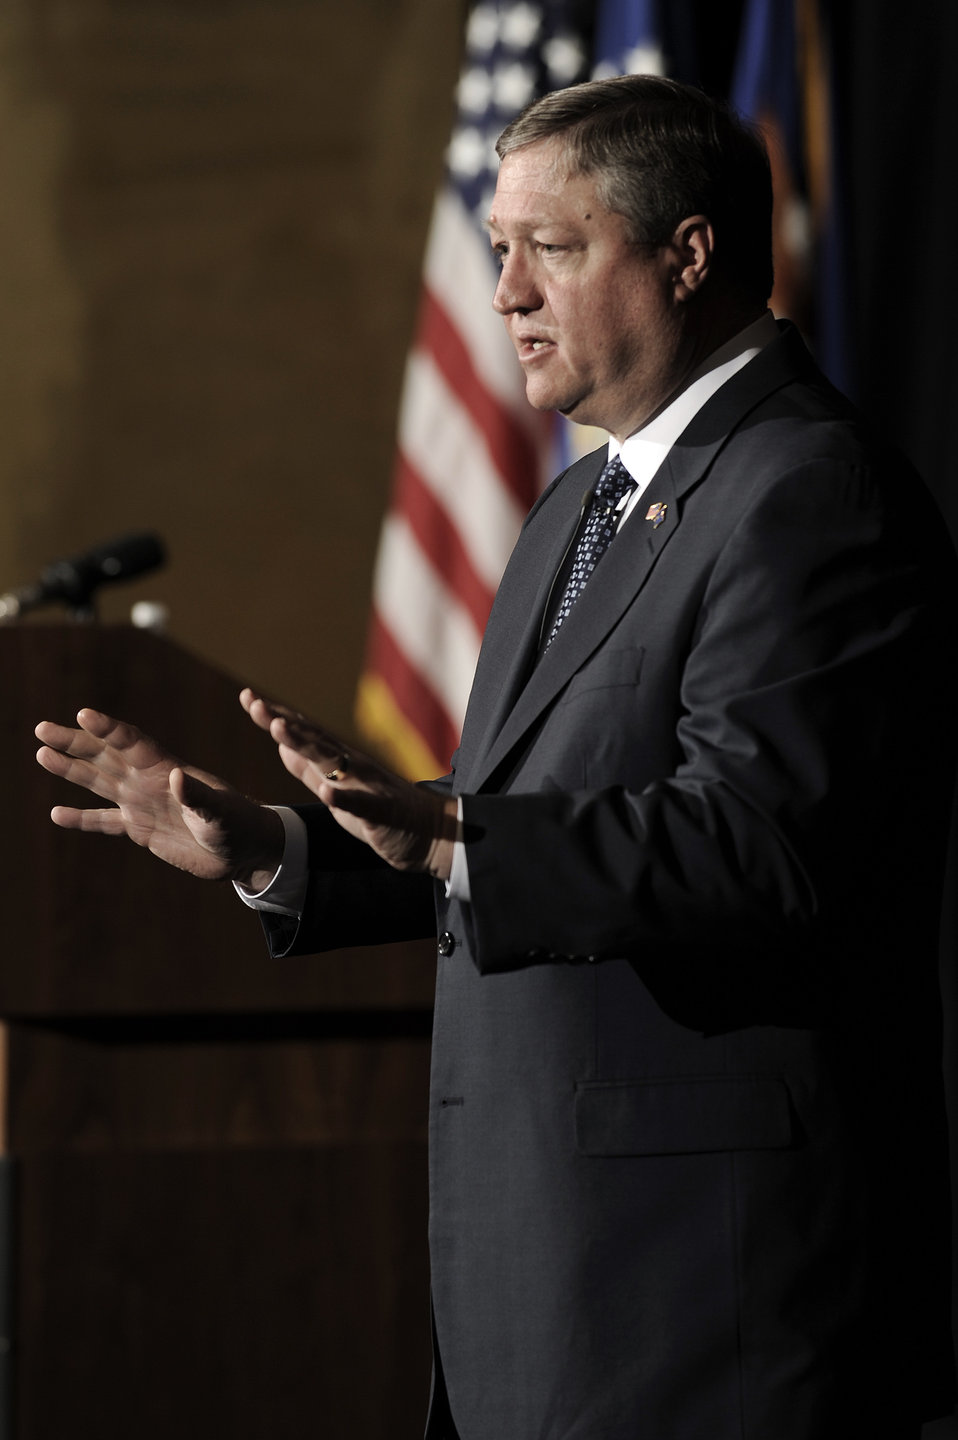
'Visions of Valor' portraits honor heroes

Secretary of the Air Force Michael B. Donley briefs the U.S. Air Force Academy cadet wing during a cadet call held at Arnold Hall April 3 at the Academy in Colorado. The cadets also asked questions of the secretary, everything from current operations in cyberspace to budget challenges balancing current and future resource requirements.